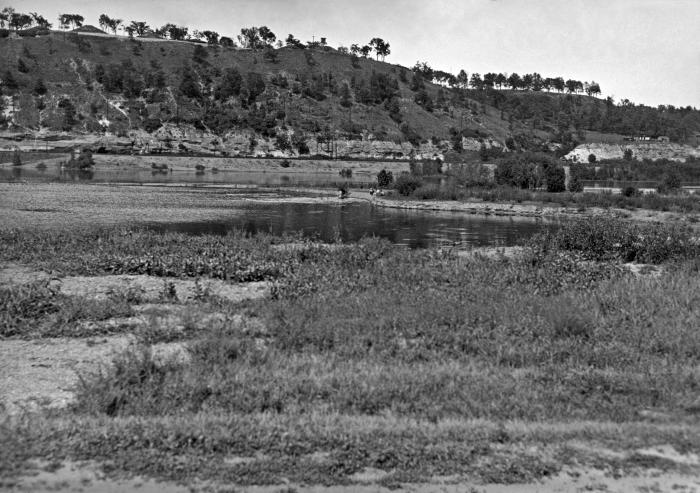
This photograph showed some boys who were swimming in the Mississippi River near the St. Paul airport on June 3, 1933. It was taken during a Minnesota Department of Health study of the public bathing and recreation areas along the river.